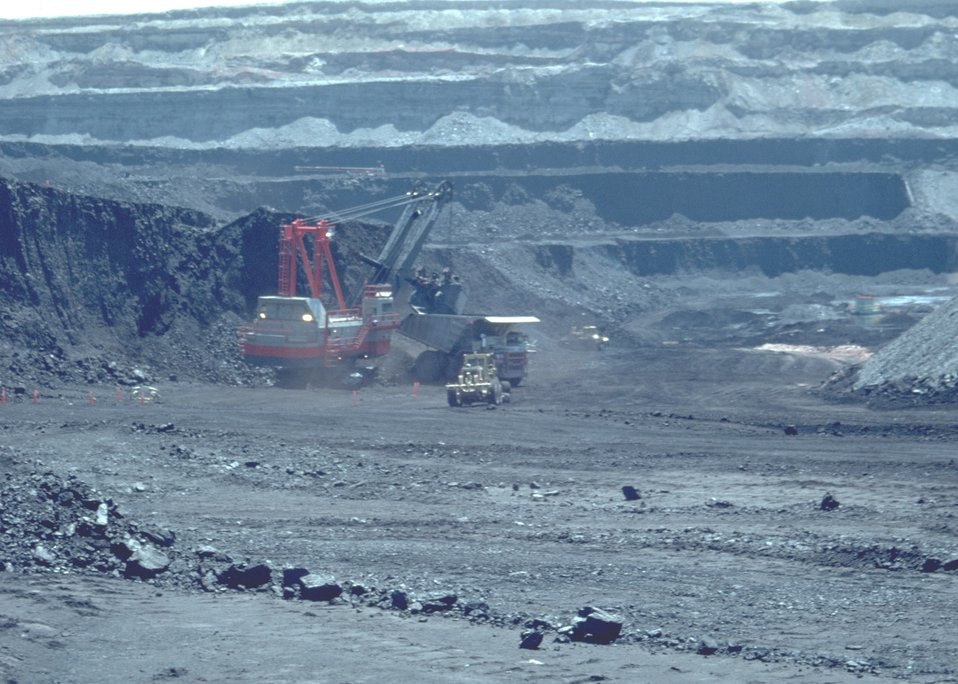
Coal bed methane development.